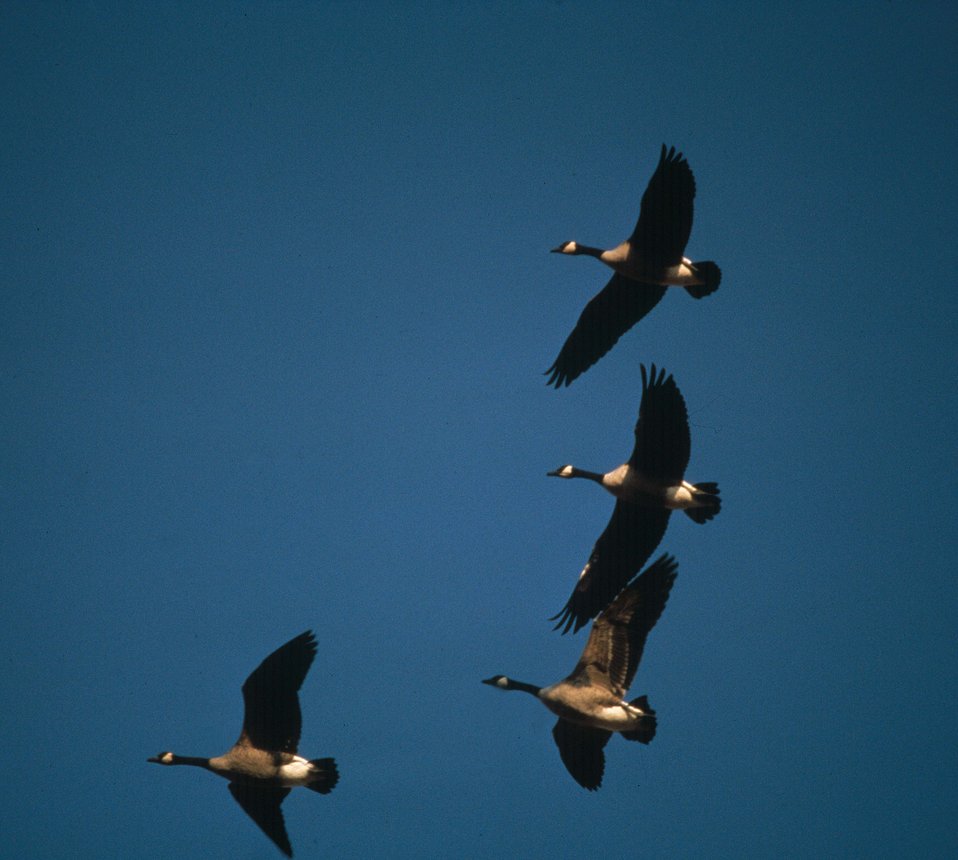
Canada Geese in Flight